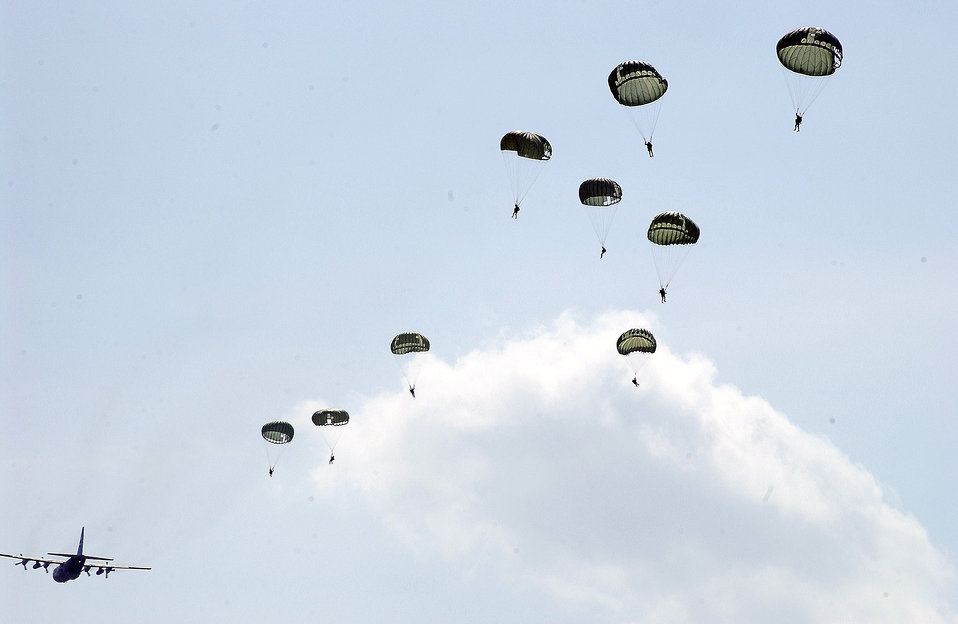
Everybody's doing it

OVER MOODY AIR FORCE BASE, Ga. -- Members of the 820th Security Forces Group free fall to the earth after jumping out of an HC-130 aircraft March 21.